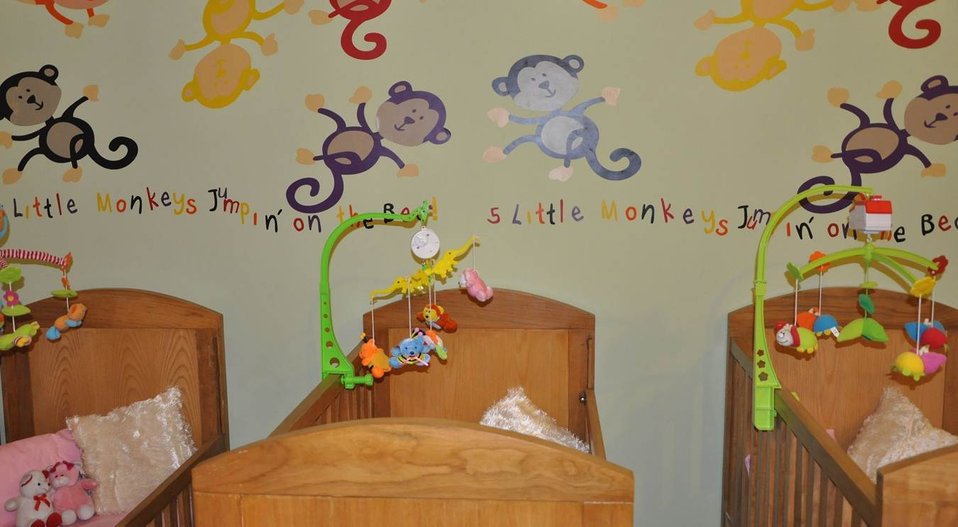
The United States Supports a Day Care Center at MEPCO

A inside view of the MEPCO daycare center in Multan.